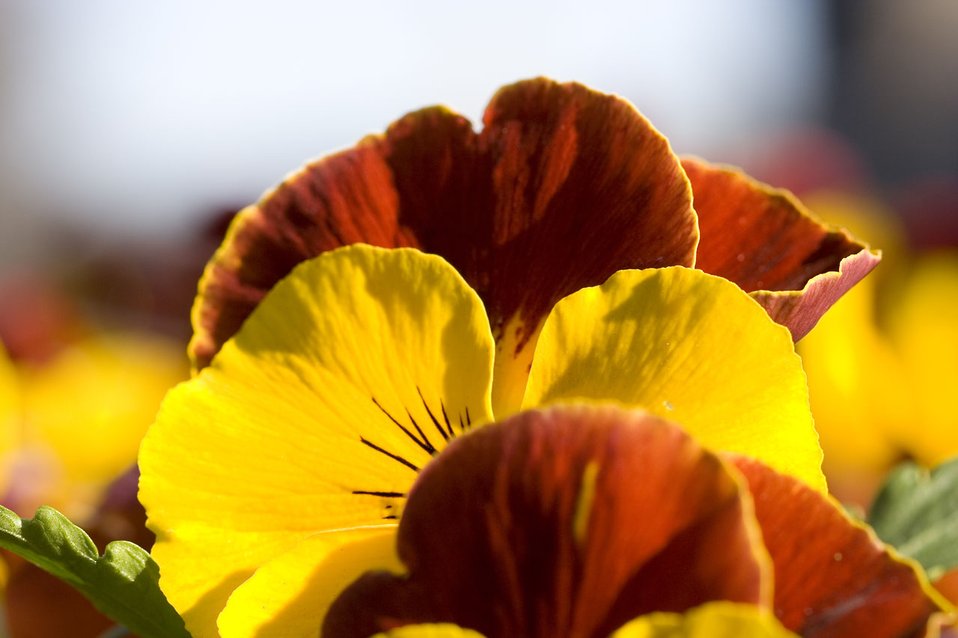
Pansy

Macro photo of pansy petals.